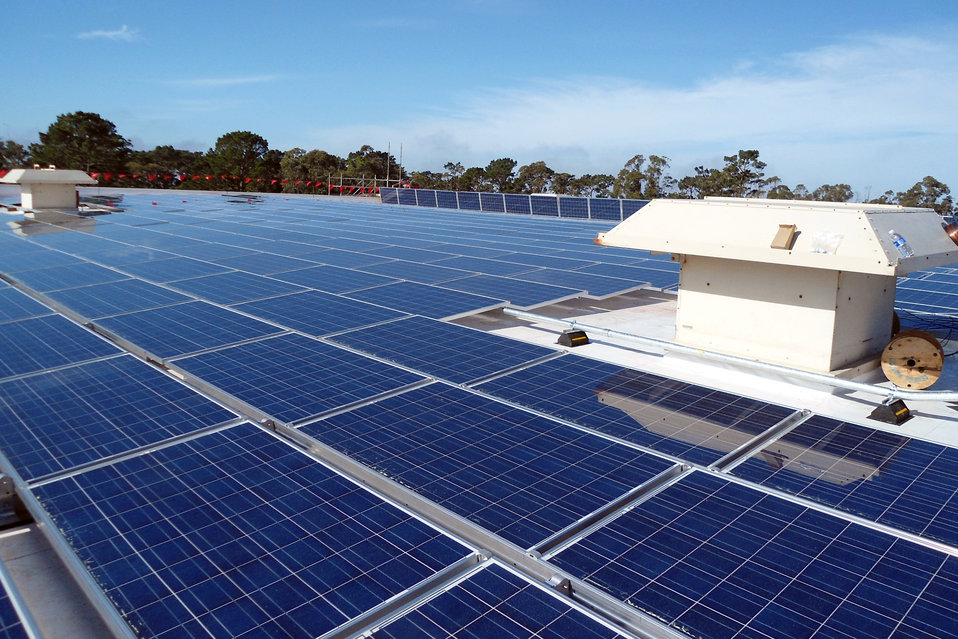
Solar panels at Presidio of Monterey

Nearly 2,000 panels sit atop the post gymnasium at Presidio of Monterey in Monterey, Calif., shown January 26, 2012. The U.S. Army Corps of Engineers Sacramento District oversaw placement of the panels, completed in early April 2012 and part of a $2 million project to provide up to an estimated 660,000 kilowatts of power a year.